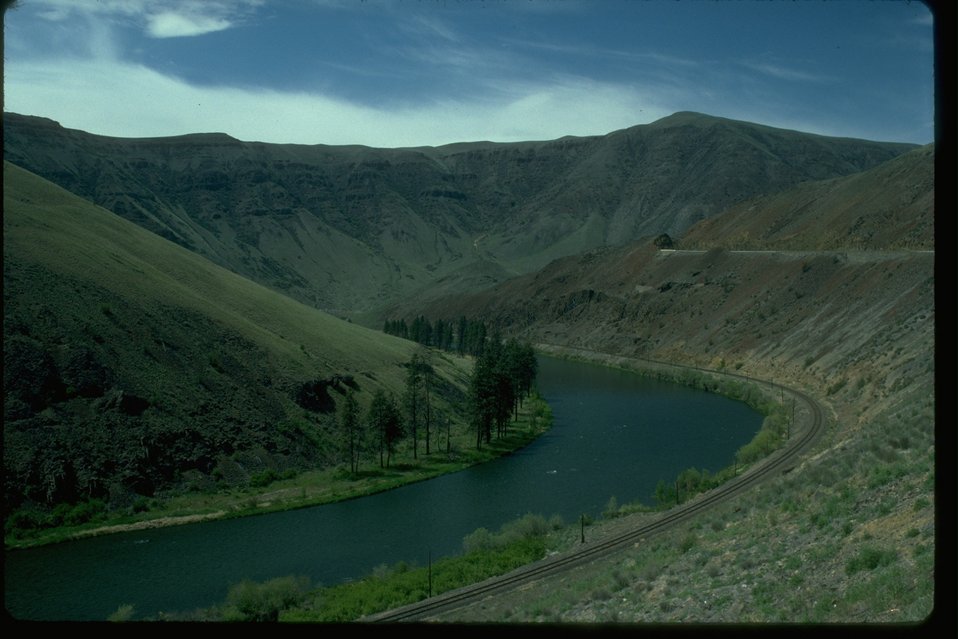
Yakima River Canyon Management Area